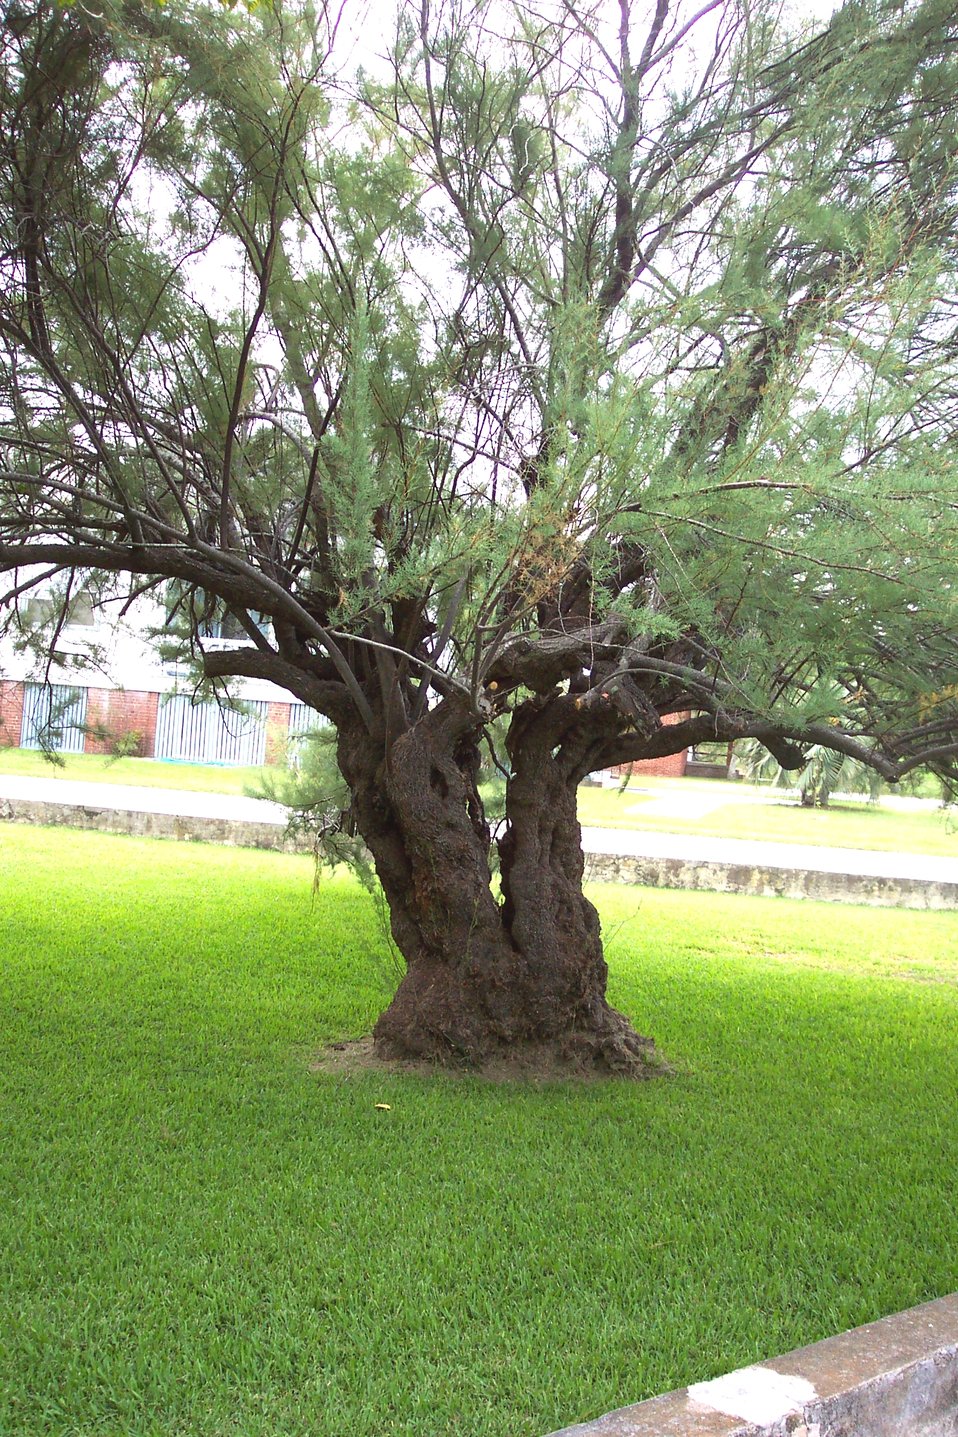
A gnarly tree at Stella Maris Catholic Church on Sullivans Island.